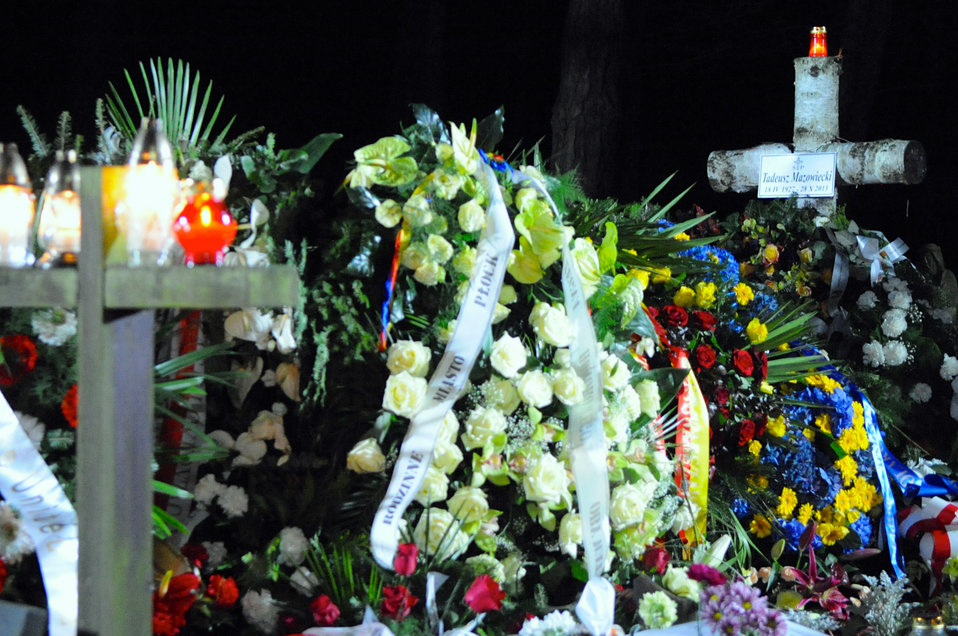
Flowers Cover the Gravesite of Former Polish Prime Minister Mazowiecki

Flowers and a birch cross mark the gravesite of former Polish Prime Minister Tadeusz Mazowiecki as U.S. Secretary of State John Kerry arrives at Laski Cemetery outside Warsaw, Poland, to pay his respects on November 4, 2013.